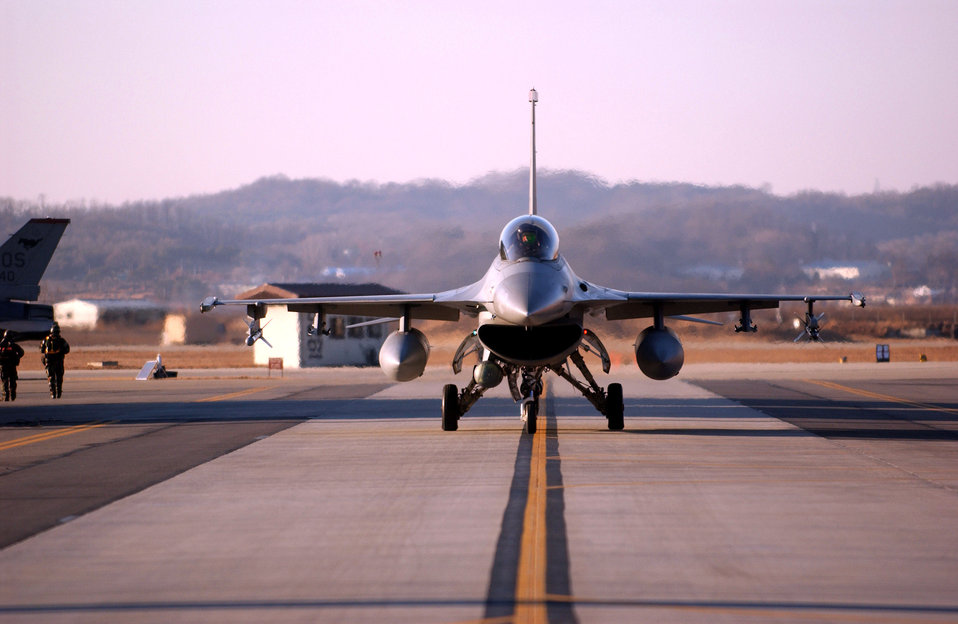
Beverly Bulldog 06-01

OSAN AIR BASE, South Korea (AFPN) -- An F-16 Fighting Falcon from the 36th Fighter Squadron returns from a mission during exercise Beverly Bulldog 06-01 here Jan. 24. Exercise scenarios test the base's ability to protect its operations from missile attacks or enemy forces.